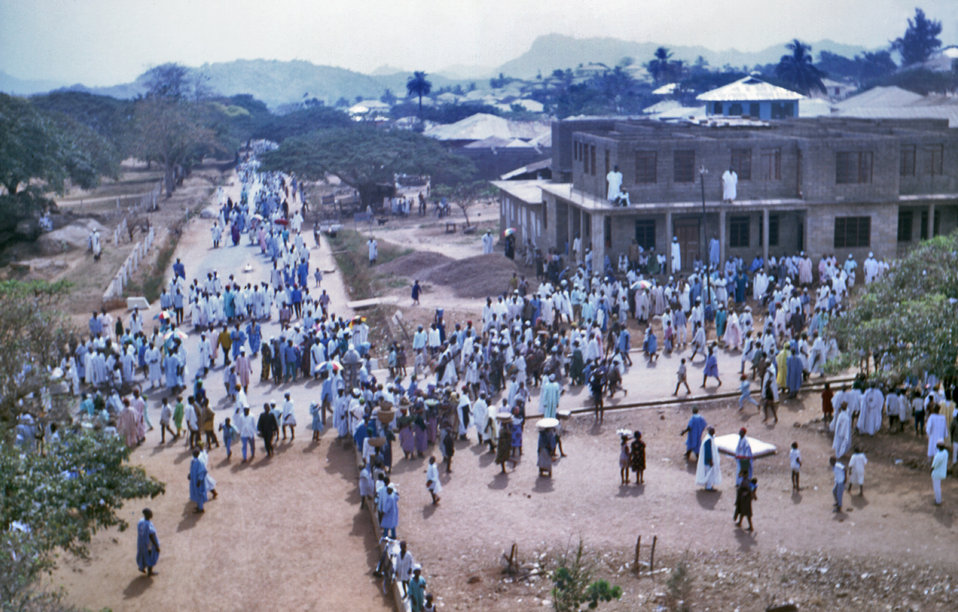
This 1969 photograph was captured while overlooking a crowd of people in the streets of Dekina, Nigeria, which was the site of a smallpox outbreak that same year.